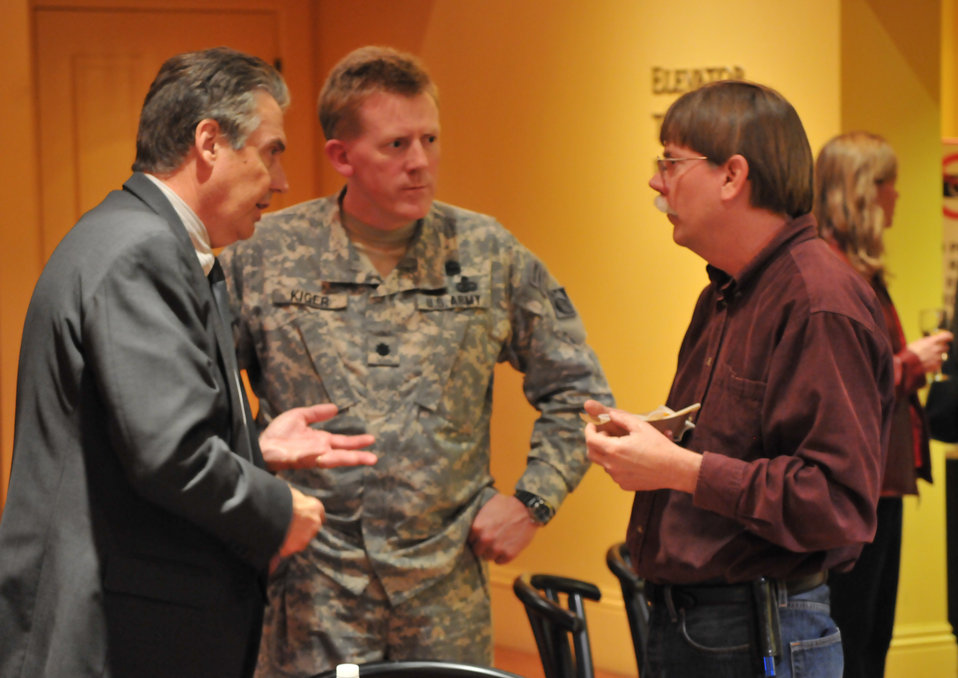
Groundreaking ceremony for the Napa Creek flood risk reduction project

NAPA, Calif. (Oct. 22, 2010) - U.S. Army Corps of Engineers Sacramento District deputy district commander Lt. Col. Andrew Kiger (center) and Corps project manager Bert Brown (left) discuss flood risk reduction measures with a local resident during a groundbreaking ceremony for the Napa Creek flood risk reduction project here Oct. 22. The $14.8 million project, funded by the American Recovery and Reinvestment Act of 2009, is a joint effort of the Corps, the city of Napa, and the Napa Flood Control and Water Conservation District, to reduce flood risk for Napa, Calif.